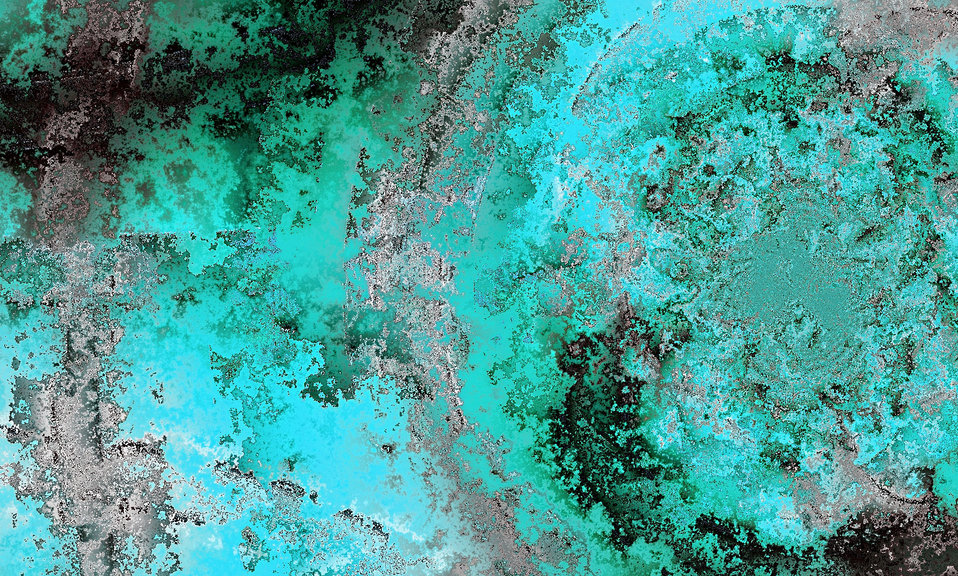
Green turquoise background structure.